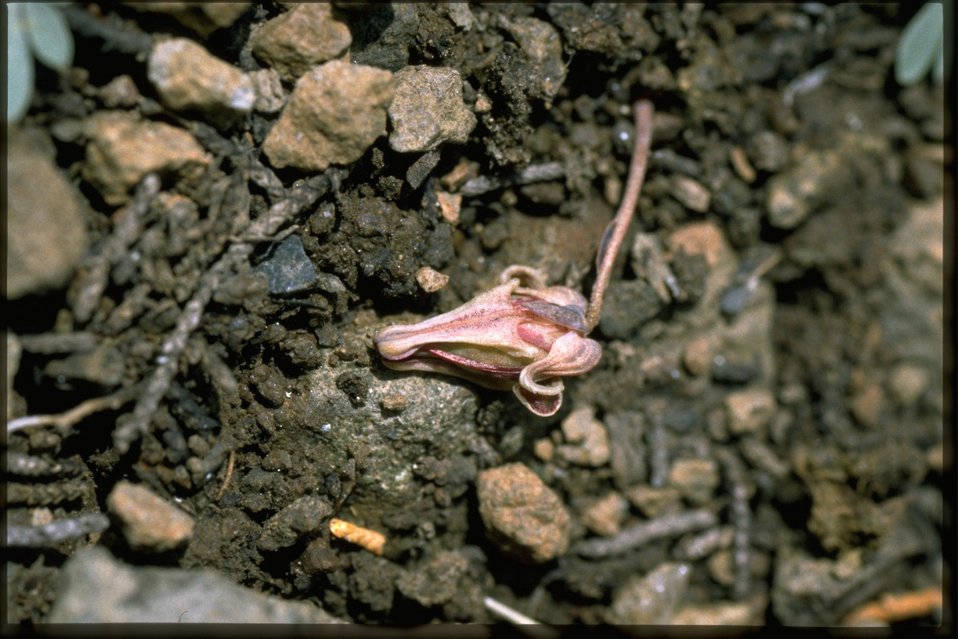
Medium shot of Steer's Head, Dicentra Uniflora, wildflower.